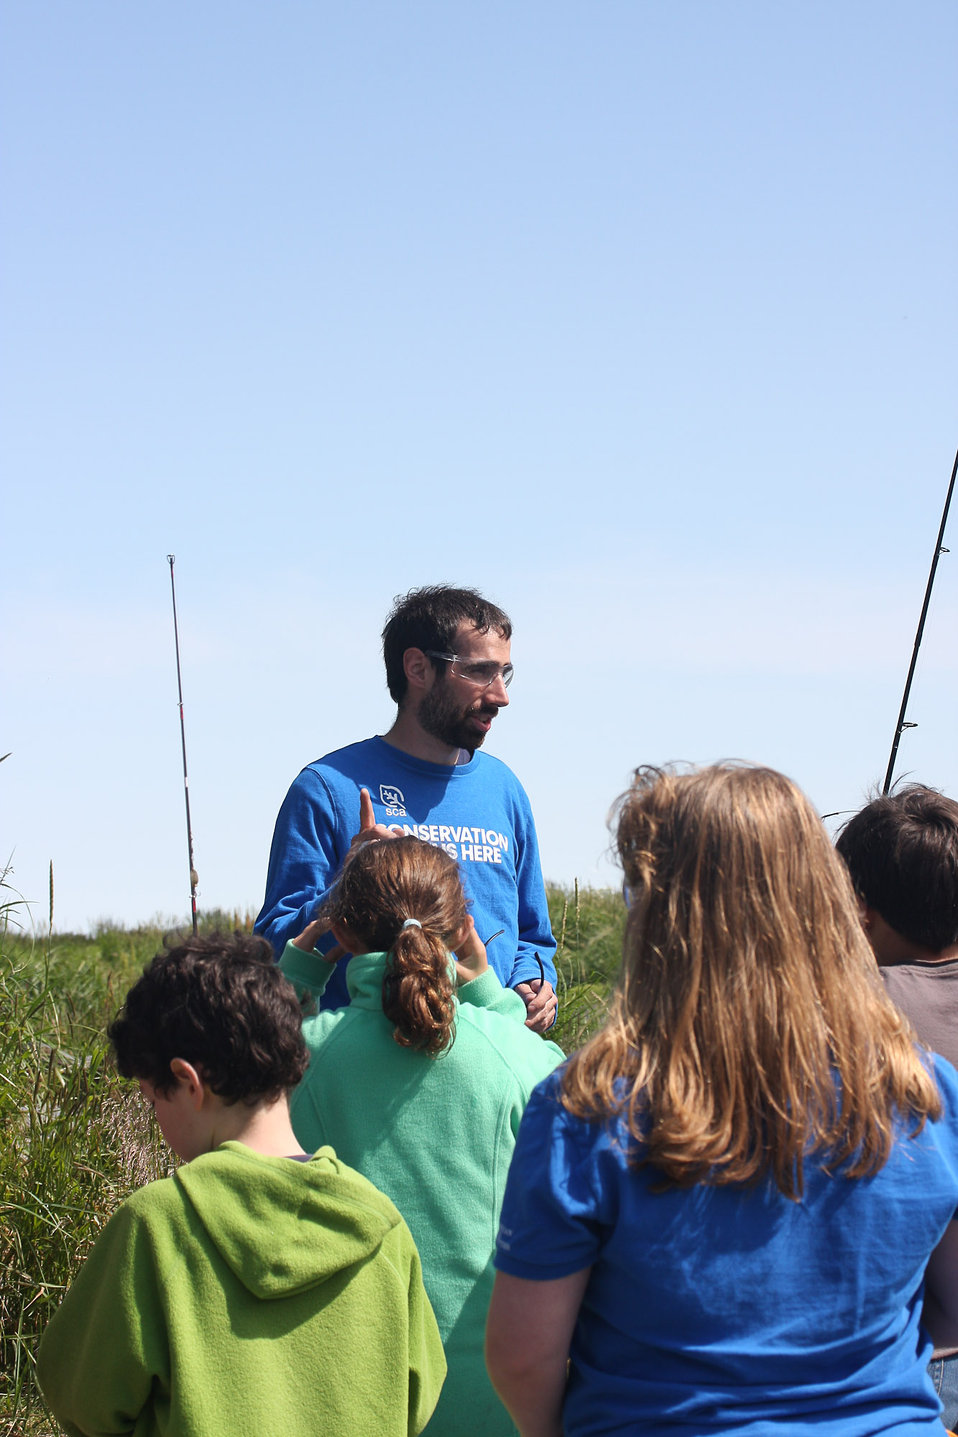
SCA volunteer Rory Psotka with fishing Salmon Camp

Photo Credit: Lisa Hupp/USFWS
Source: Kodiak NWR